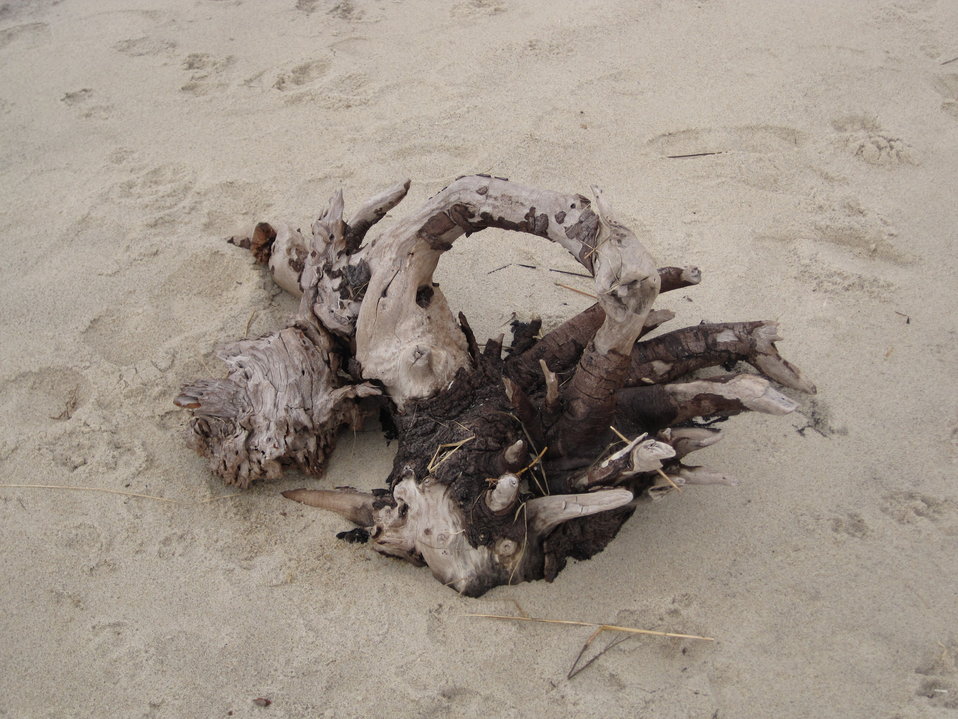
Driftwood on beach at Monomoy

Witnessing nature's wondrous beauty on the beach at Monomoy.

Credit: Keith Shannon/USFWS

Monomoy National Wildlife Refuge is part of the Eastern Massachusetts National Wildlife Refuge Complex.